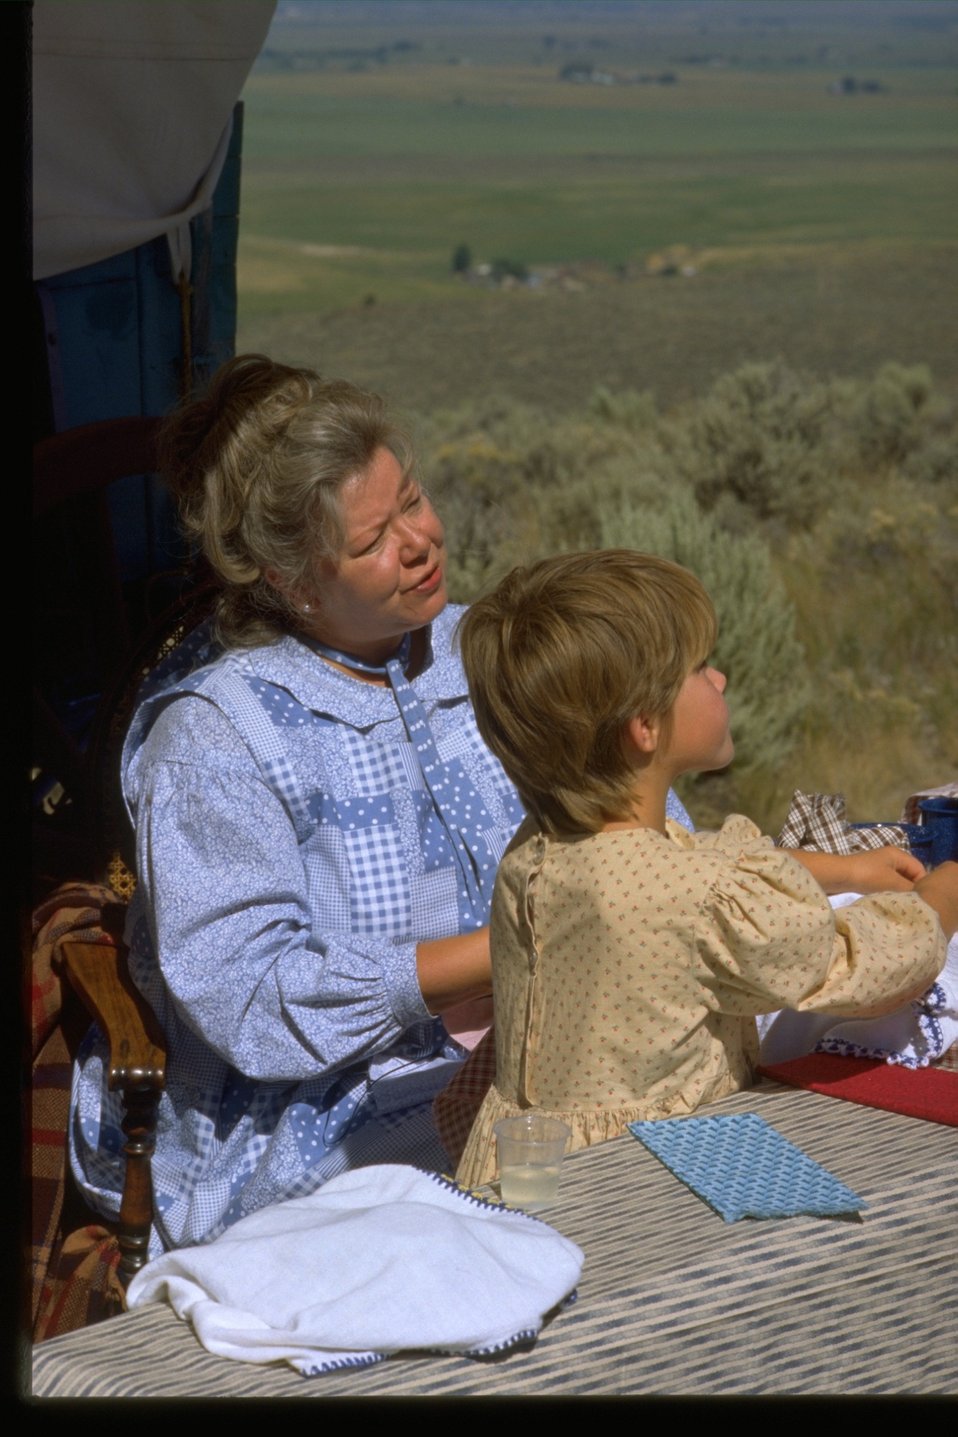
Pioneer Festival with Dee and Tajah at the NHOTIC.